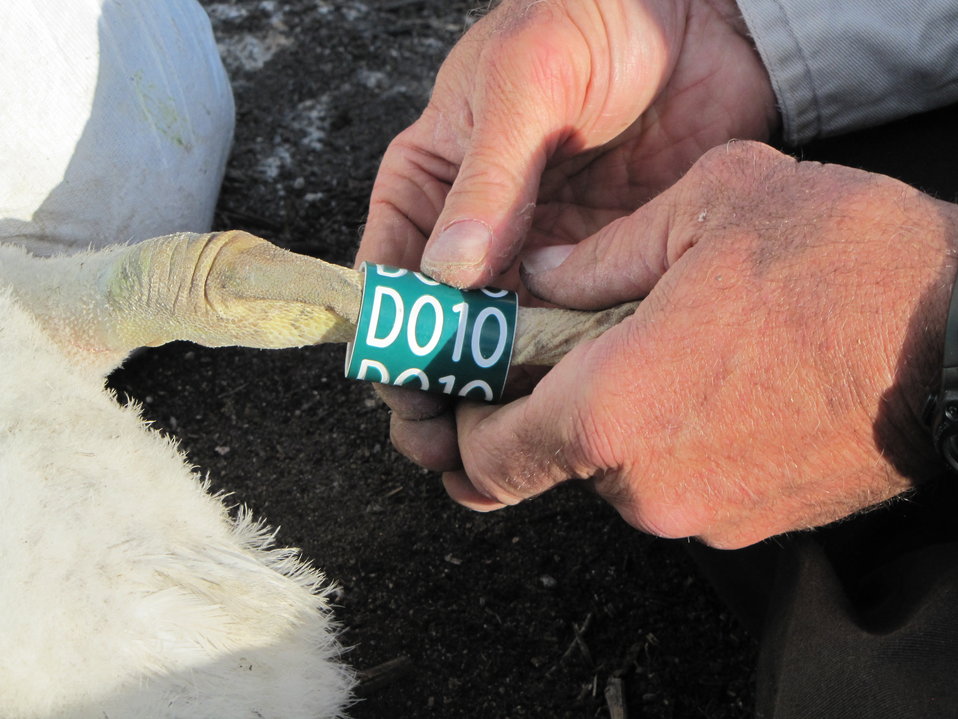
Band on pelican leg

Pelicans are fitted with two leg bands during banding at Chase Lake National Wildlife Refuge in North Dakota.